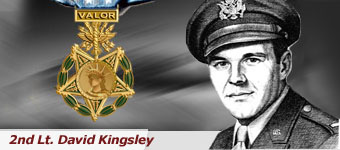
2nd Lt. David Kingsley

On his 20th combat mission, 2nd Lt. David R. Kingsley made a life-or-death decision. He gave up his parachute, to another crewmember. This cost Lieutenant Kingsley his life, and for his actions, he was awarded the nation's highest military honor, the Medal of Honor.